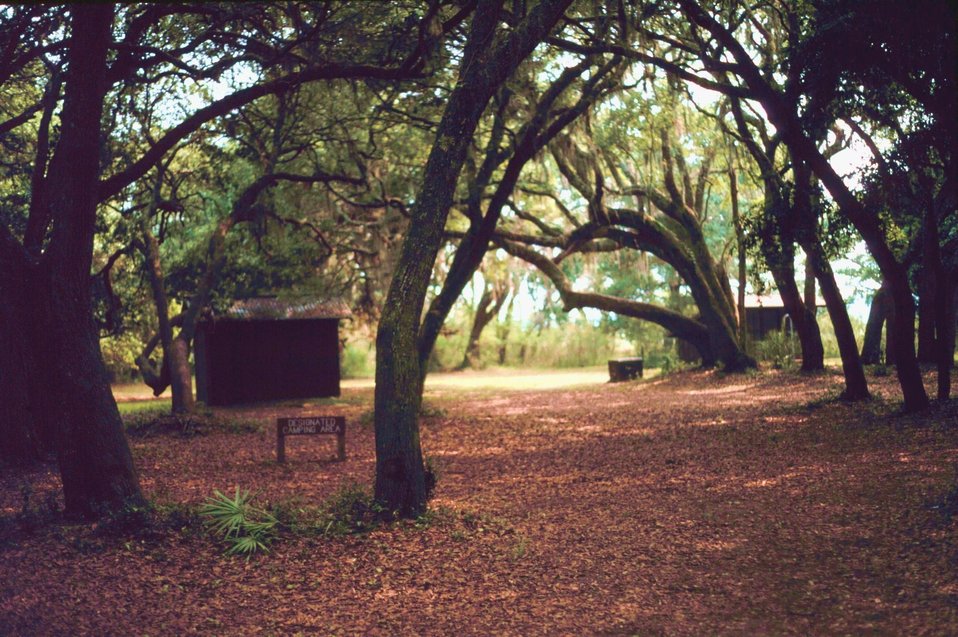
The campground at Cabretta.